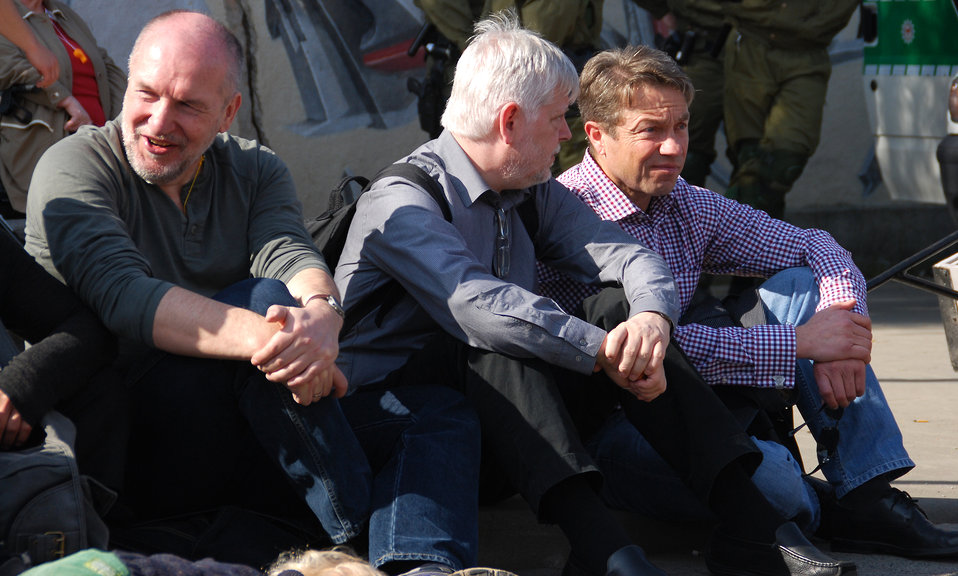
Proteste gegen den Nazi-Aufmarsch am 24.3.2012 in Frankfurt (Oder), mit Helmuth Markov, Finanzminister des Landes Brandenburg, Günter Baaske, Sozialminister des Landes Brandenburg und Axel Henschke, Mitglied des Landtages Brandenburg